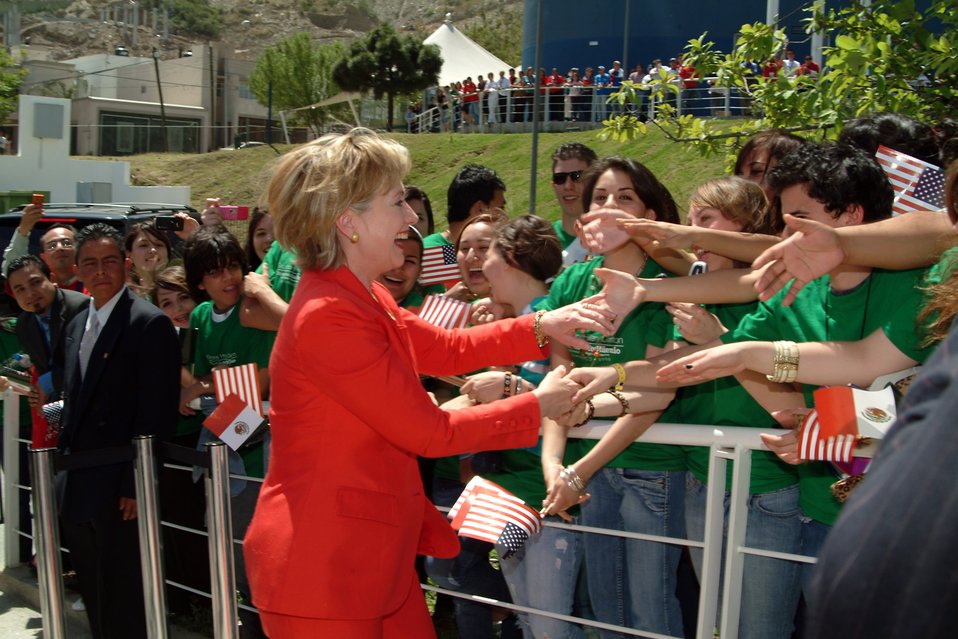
Secretary Clinton at TecMilenio University

U.S. Secretary of State Hillary Rodham Clinton greets students upon arrival at Tecmilenio University in Monterrey, Mexico March 26, 2009.